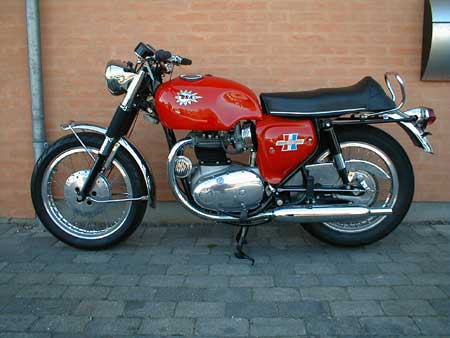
1967 BSA Spitfire I Royston Lloyd own this picture taken on my digital camera.